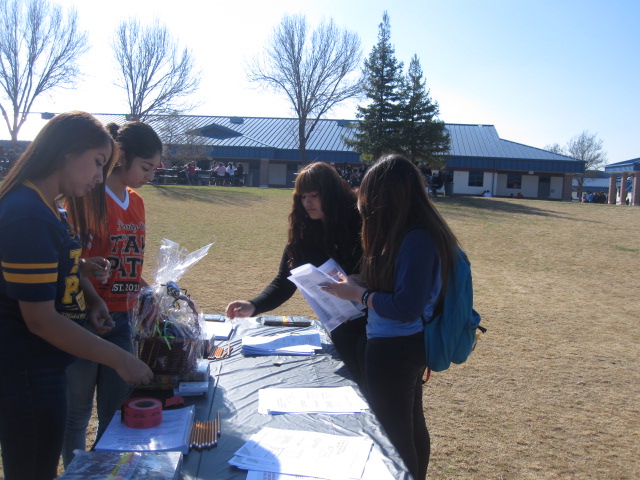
Fresno, CA NDFW 2013

Performing Above the High(PATH) NDFW Events 2013, Fresno, Ca.